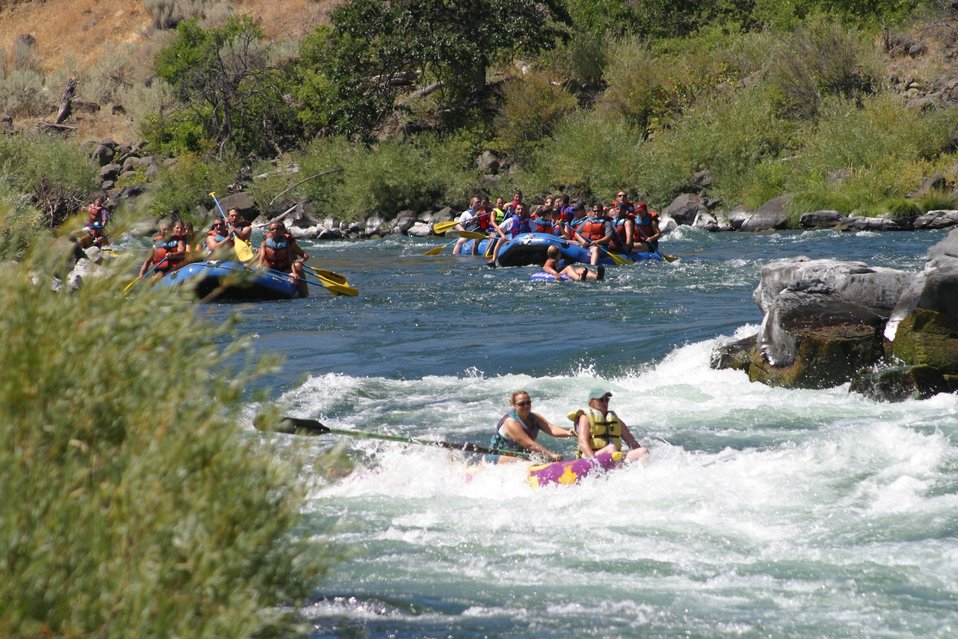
Wapinitia Rapids class III, has large roller coaster waves. 7/26/03 Pelton Dam 3600 cfs: Moody Rapids 4300 cfs.